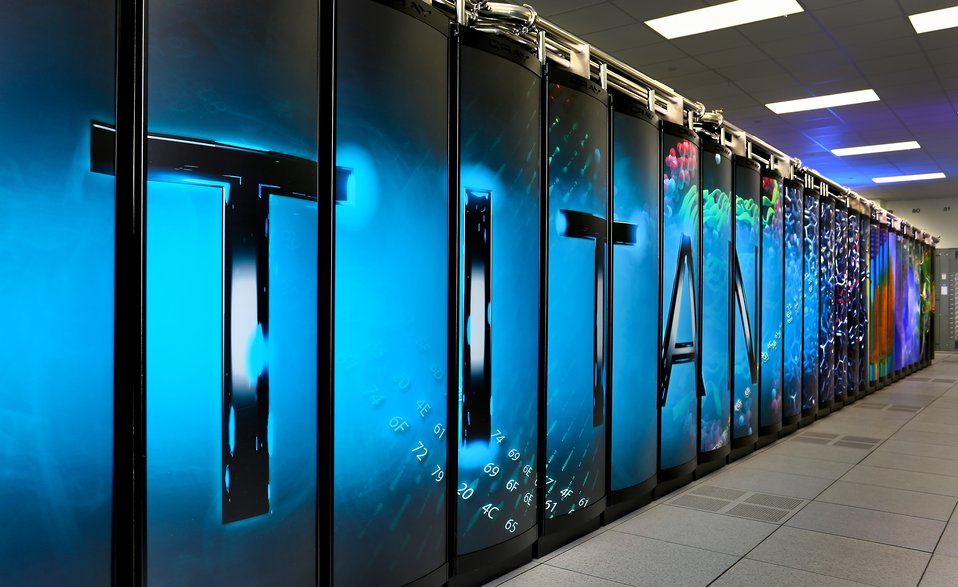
Oak Ridge Leadership Computing Facility (OLCF) is home to TITAN, the world's most powerful supercomputer for open science with a theoretical peak performance exceeding 20 petaflops (quadrillion calculations per second).

Titan will be 10 times more powerful than ORNL's last world-leading system, Jaguar, while overcoming power and space limitations inherent in the previous generation of high-performance computers. It will provide unprecedented computing power for research in energy, climate change, efficient engines, materials and other disciplines and pave the way for a range of achievements in sciences and technology.